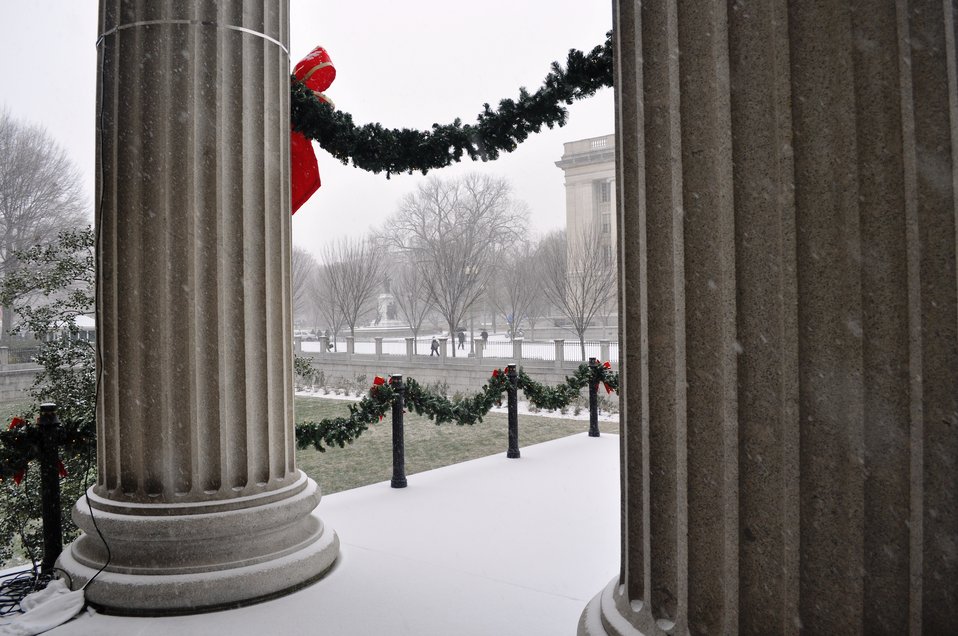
View of the snow

View from the Treasury Department during DC's first snowfall of the season.